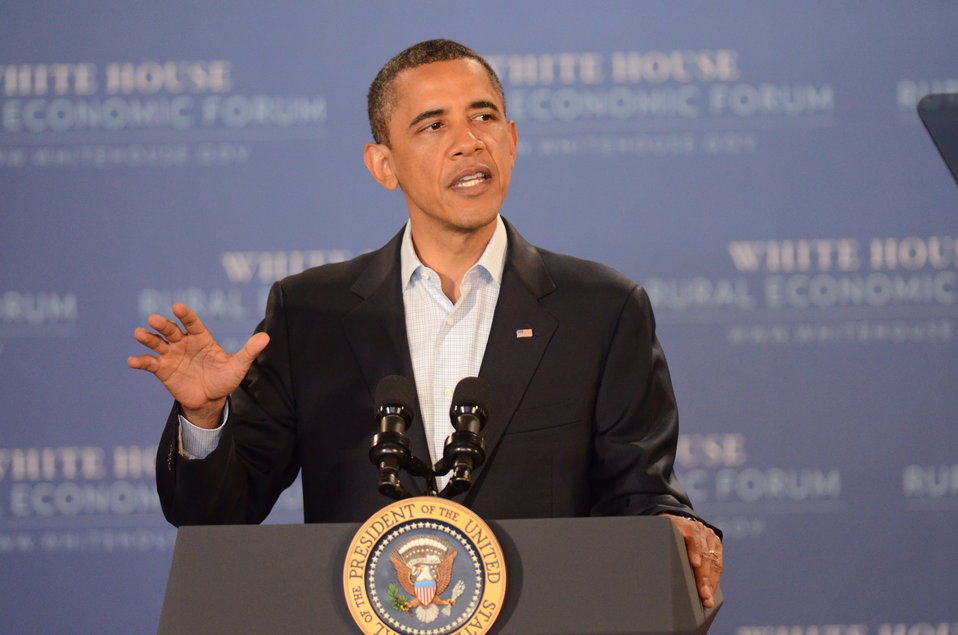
President Barack Obama speaking at the Northeast Iowa Community College, for a White House Rural Economic Forum on Tuesday, Aug. 16, 2011. The President’s visit will focus on agriculture’s contribution to the national economy, and how to create more jobs in rural America.